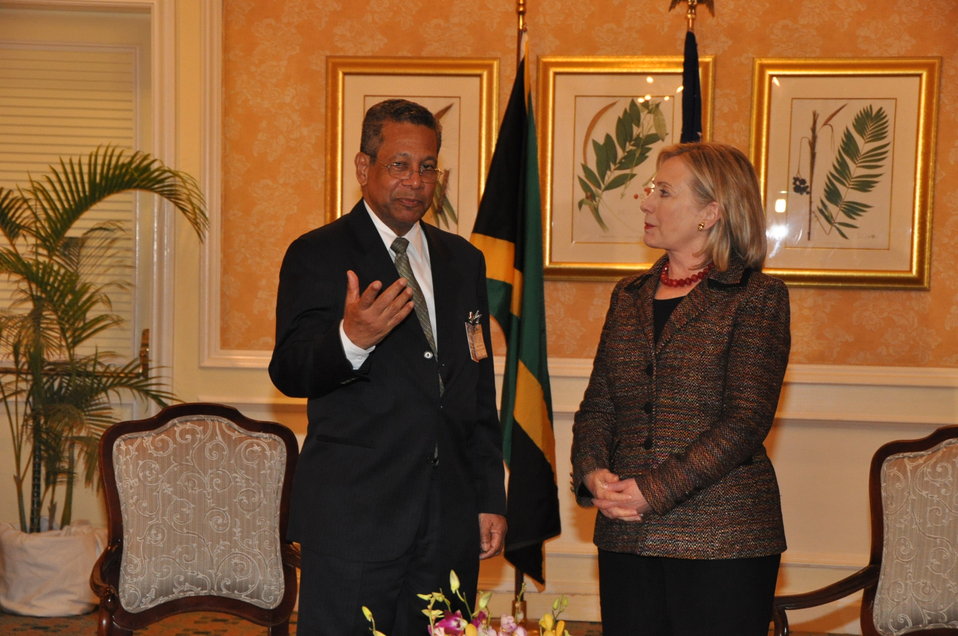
Secretary Clinton Meets With Jamaican Foreign Minister Baugh

U.S. Secretary of State Hillary Rodham Clinton meets with Jamaican Foreign Minister Kenneth Baugh in Montego Bay, Jamaica, on June 22, 2011.